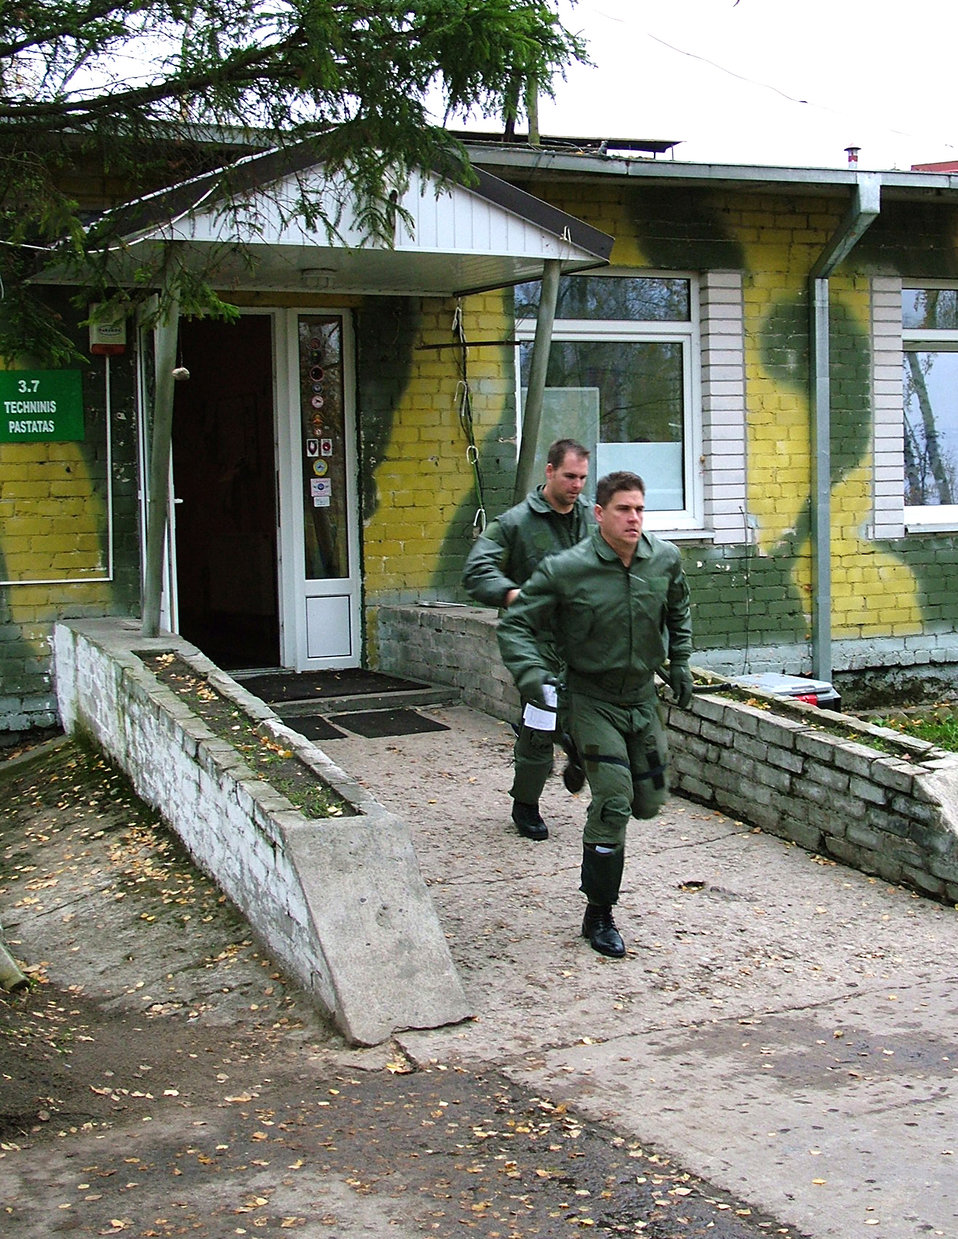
Baltic 'scramble'

SIALULIAI, Lithuania (AFPN) -- Capt. Matthew Reynolds (back), and Lt Col. David Youtsey (front), run to their alert fighters during a scramble exercise here. The 23rd EFS is participating in NATO's Baltic Air Policing mission, providing security over the skies of Lithuania, Latvia and Estonia. Captain Reynolds is a 23rd EFS alert pilot and Colonel Youtsey is the 23rd EFS detachment commander.